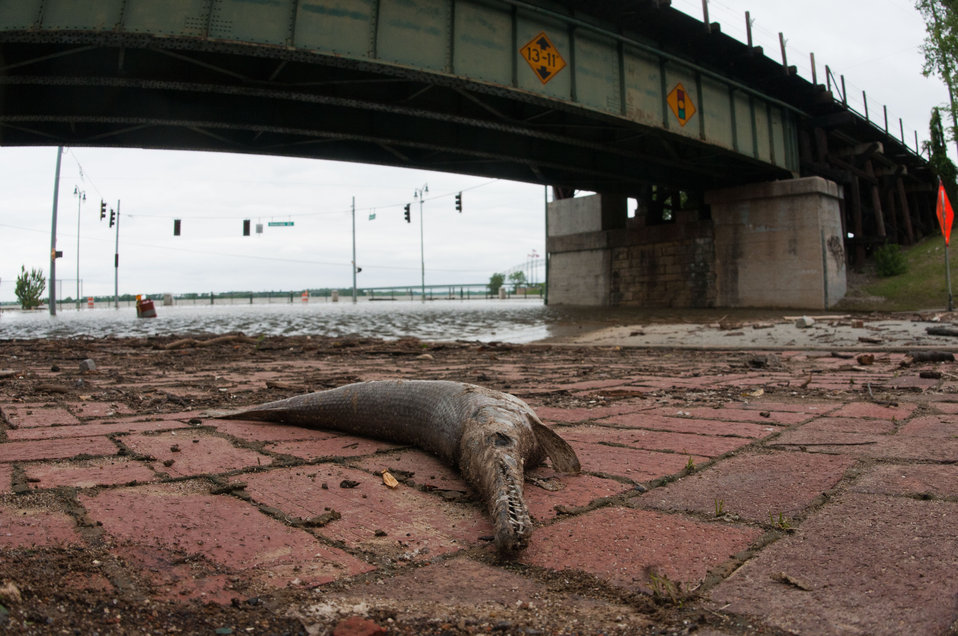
A gar fish, debris, and rocks litter historic Beale Street, below the Waterfront Trolley Bridge, when the flood crested 1-2 feet higher, than seen in this photo from Memphis, TN, three days prior to the date of this photo on Saturday, May 14. 2011 photo. The gauge for flood levels reference is on the rights support of the bridge.